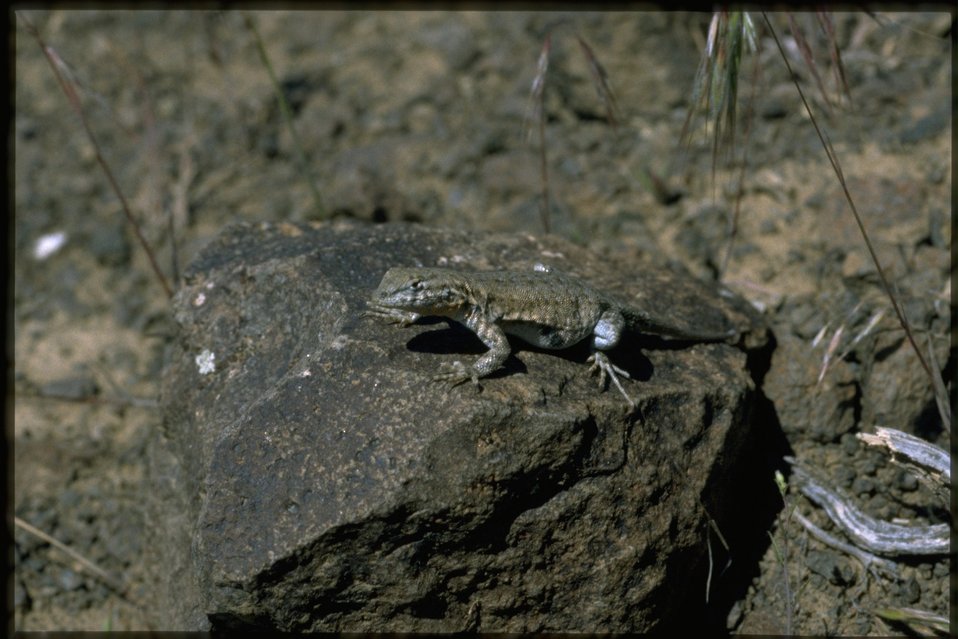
Medium shot of lizard resting on a rock.